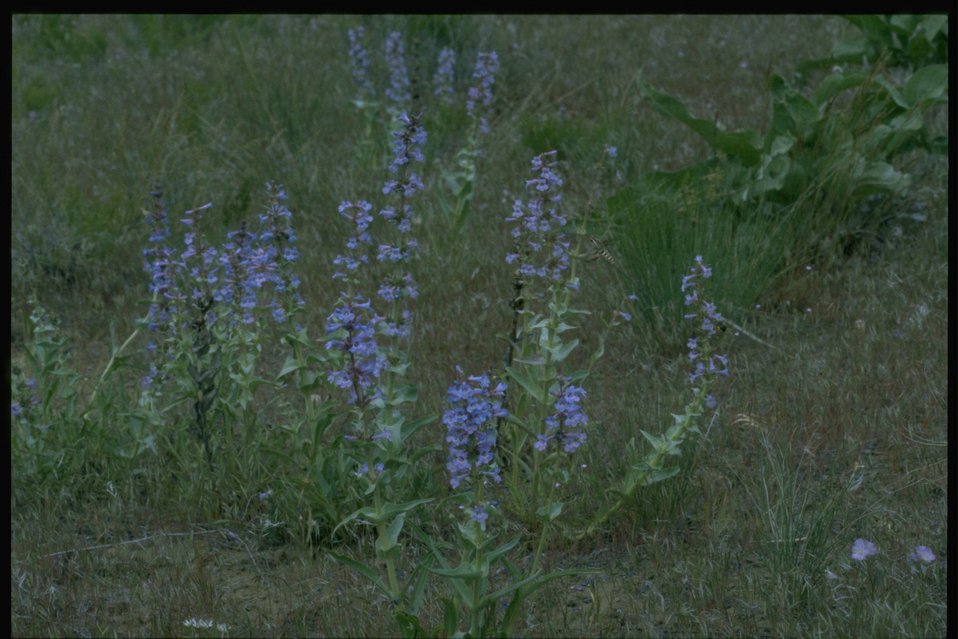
Medium shot of Lupine habitat.